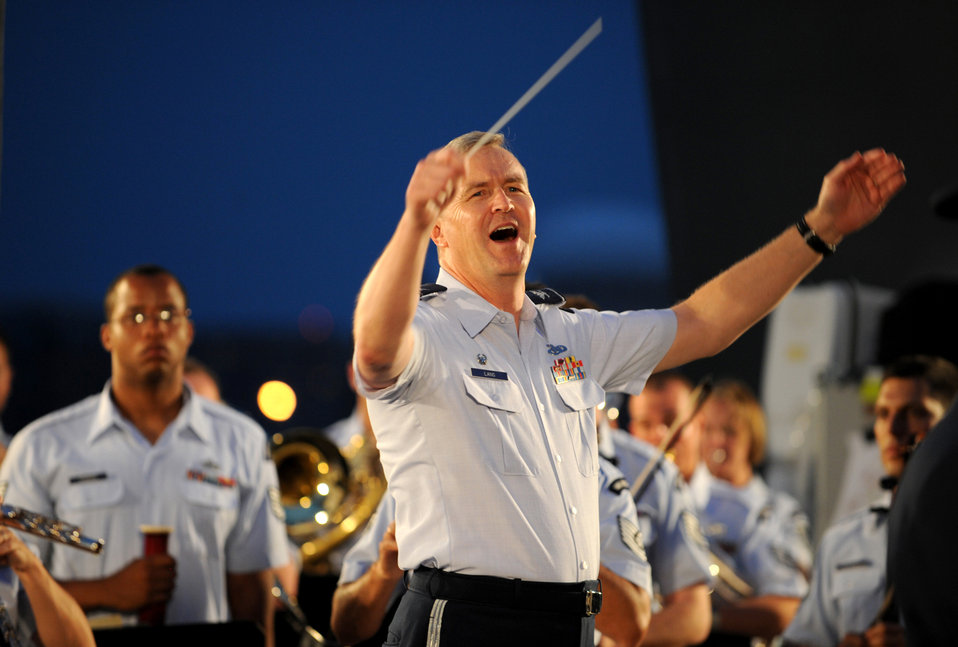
Conducting friendship

Col. Larry Lang conducts a concert at the Air Force Memorial in Washington, D.C., August 24, 2012 Throughout the summer months of June, July, and August, the band's performing ensembles present free outdoor concerts at historic venues in our nation's capital for Washington area residents, as well as for visitors from around the world. Land is the commander and conductor of the U.S. Air Force Band.